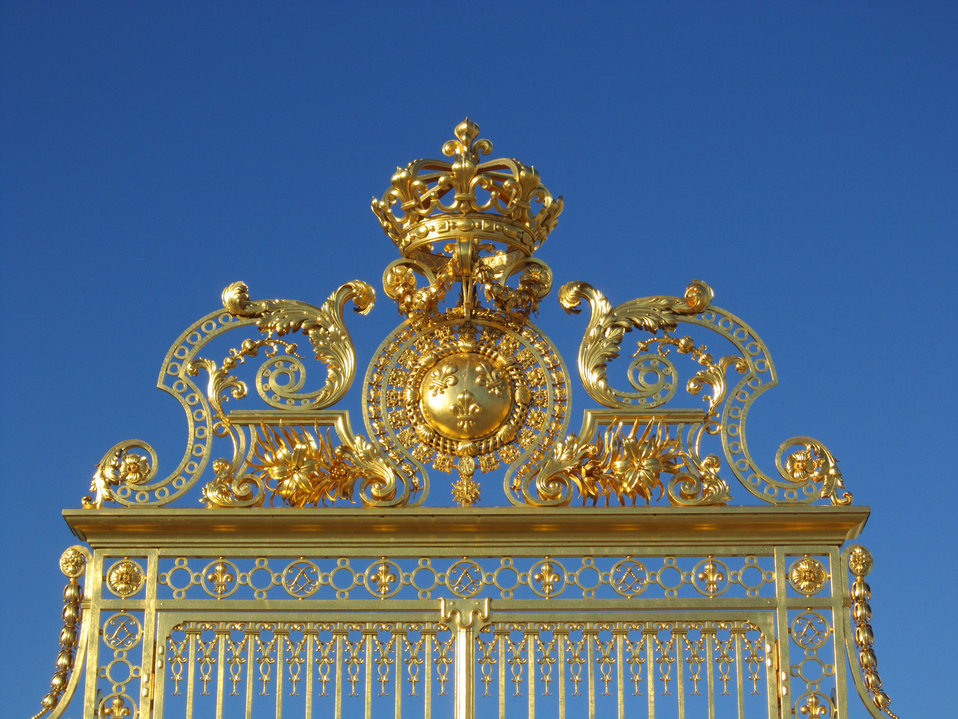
Versailles

Crown of france & arms.